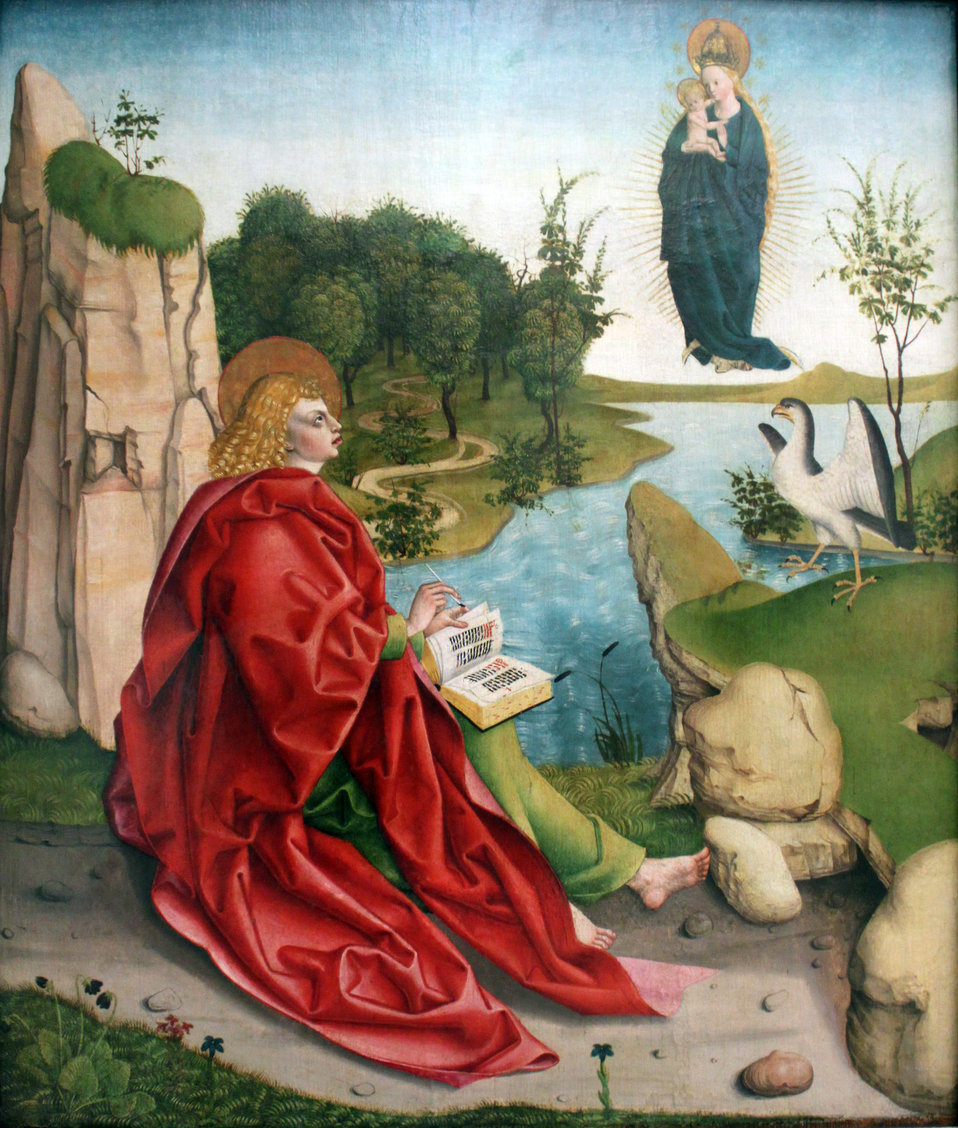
1490 Gleismüller Johannes auf Patmos anagoria